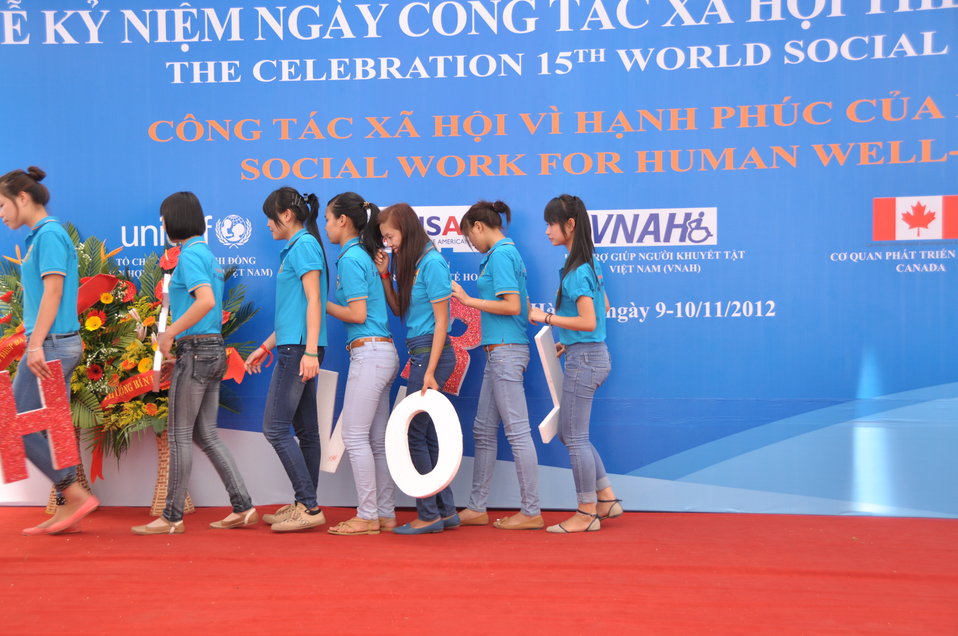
USAID Supports Social Work Education

Photo: @USAIDVietnam, November 9, 2012